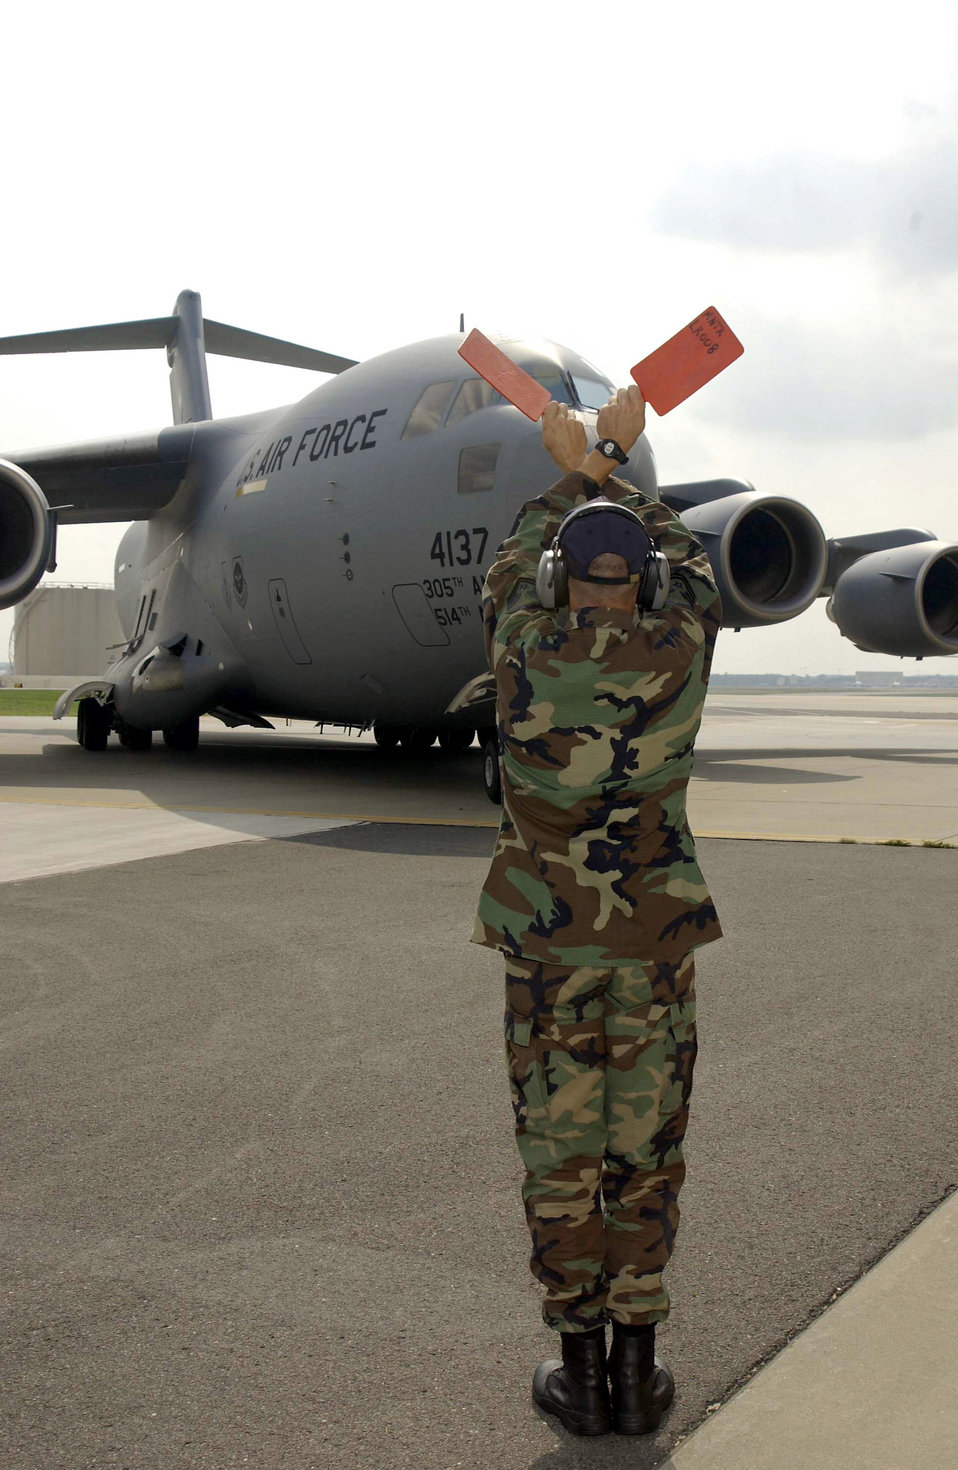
McGuire receives final C-17

MCGUIRE AIR FORCE BASE, N.J. -- Master Sgt. Corey Shagg marshals a C-17 Globemaster III here July 6. The aircraft is the 13th and final C-17 to be delivered here. The first C-17 arrived in September. McGuire has undergone more than $85 million in military construction projects in preparation for the arrival of the C-17s. Sergeant Shagg is a crew chief with the 514th Maintenance Squadron.